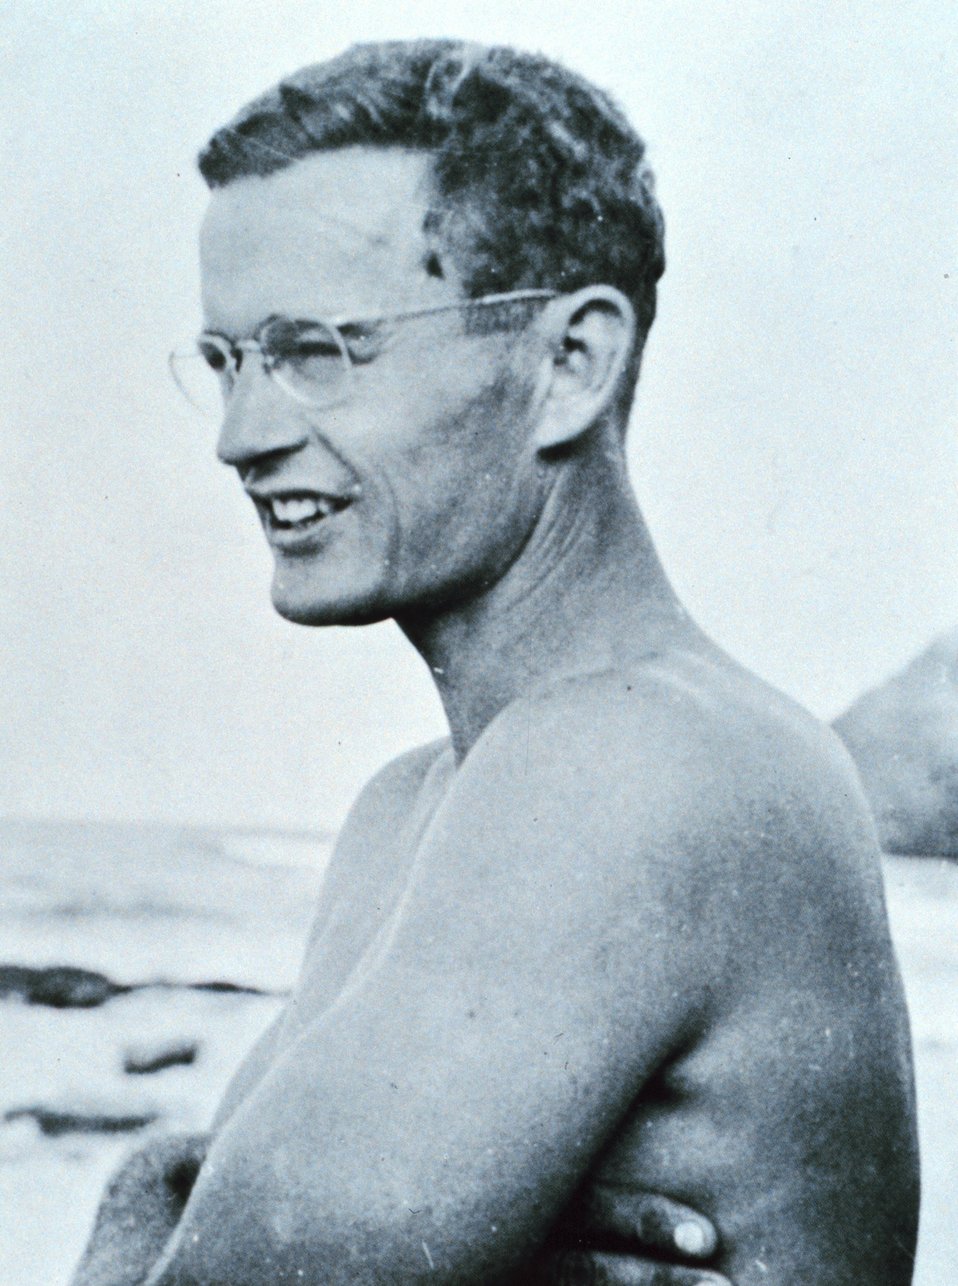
Fisheries scientist Townsend Cromwell